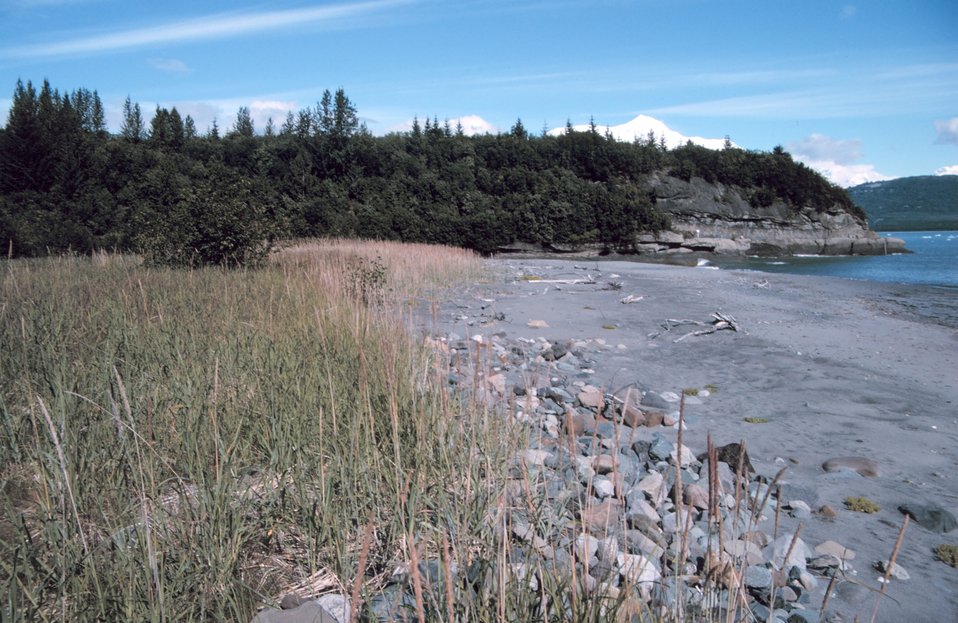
Photo #1 of Mount St. Elias sequence. Mount Saint Elias is one of the largest mountains visible from the sea on the North American continent. It rises to a height of 18,008 feet in a distance of less than 20 miles from sea level at Icy Bay.